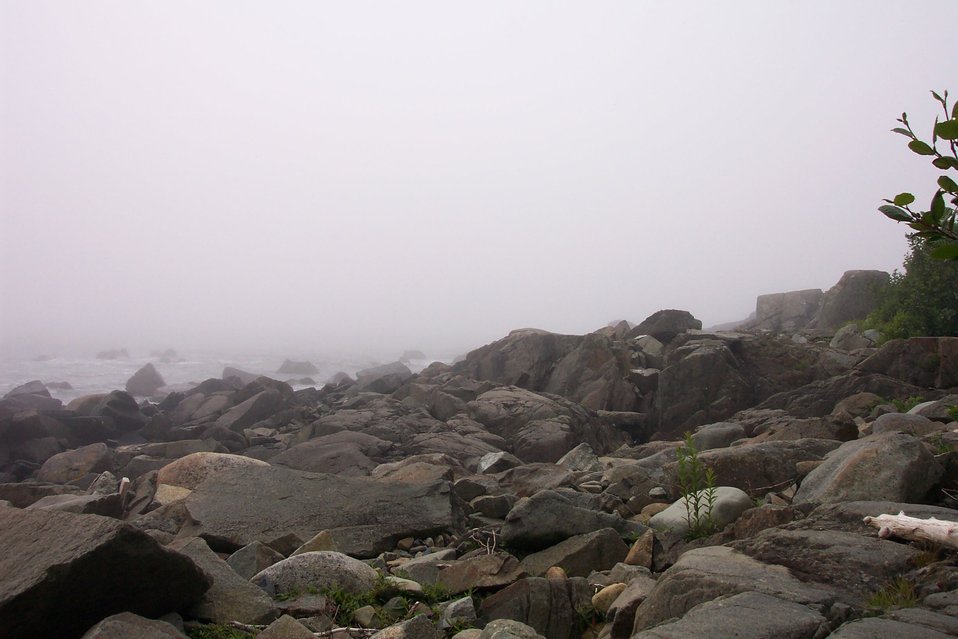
Part of a foggy rocky shoreline at West Quoddy Head.